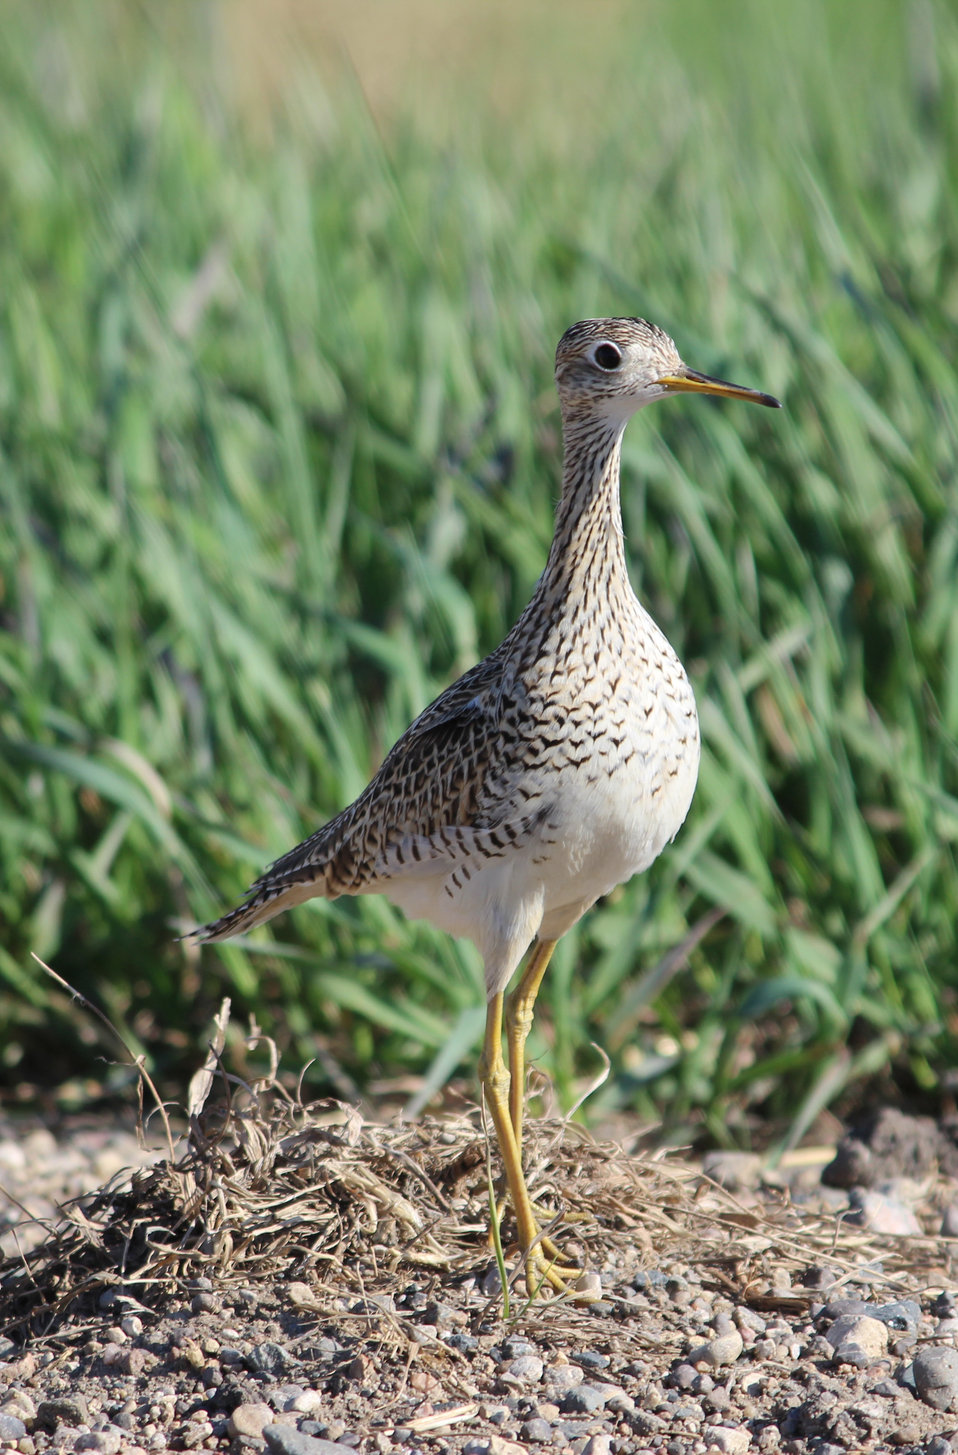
Upland Sandpiper

The upland sandpiper (Bartramia longicauda) is found feeding and nesting in grasslands--especially dry, short grasses, native prairie, or grazed areas. It nests in a shallow scrape in the ground, and its diet is mostly insects and some seeds. The upland sandpiper has an unmistakable call with the final note being a long whistle.